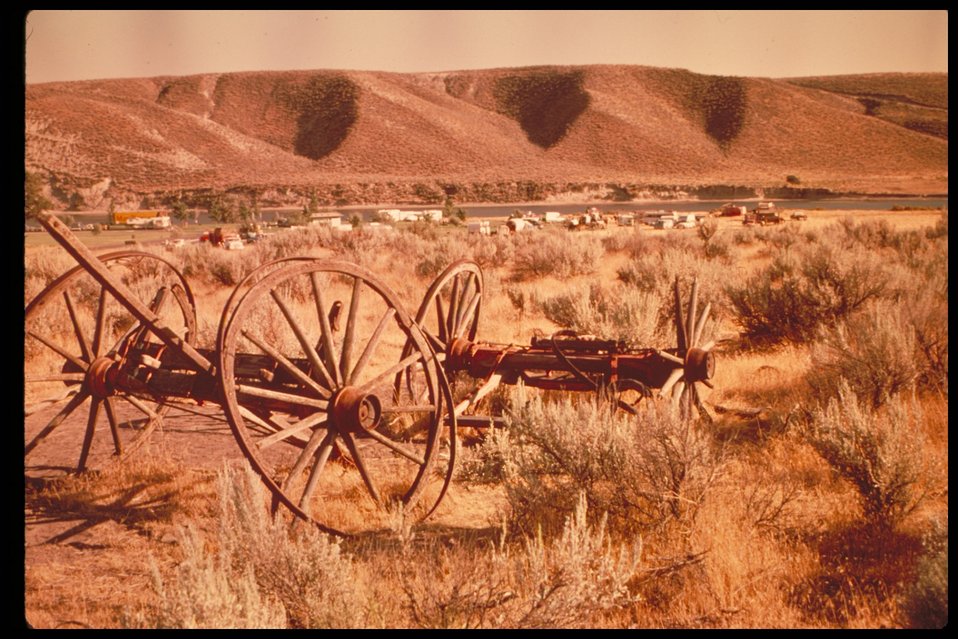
Oregon Trail Lower Snake River District